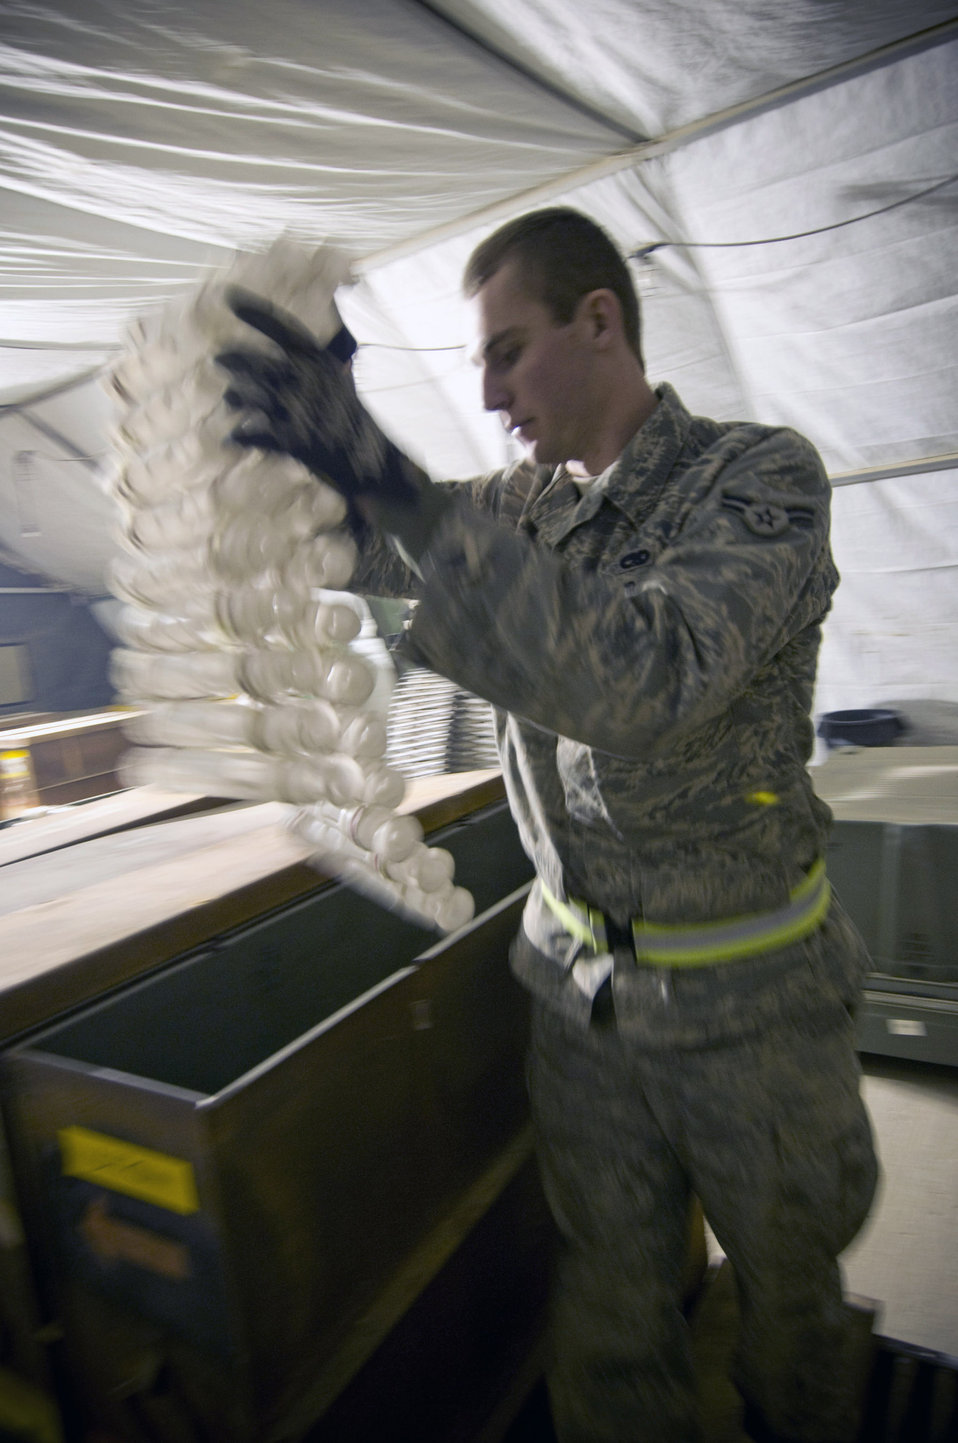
Feeding the Thunderbolt II

Airman 1st Class Jeb Snow prepares linked tube carriers for processing Dec. 2 at Bagram Airfield, Afghanistan. Airman Snow is deployed from Mountain Home Air Force Base, Idaho, and hails from Wasilla, Alaska. Airman Snow is a 455th Expeditionary Maintenance Squadron munitions systems apprentice.